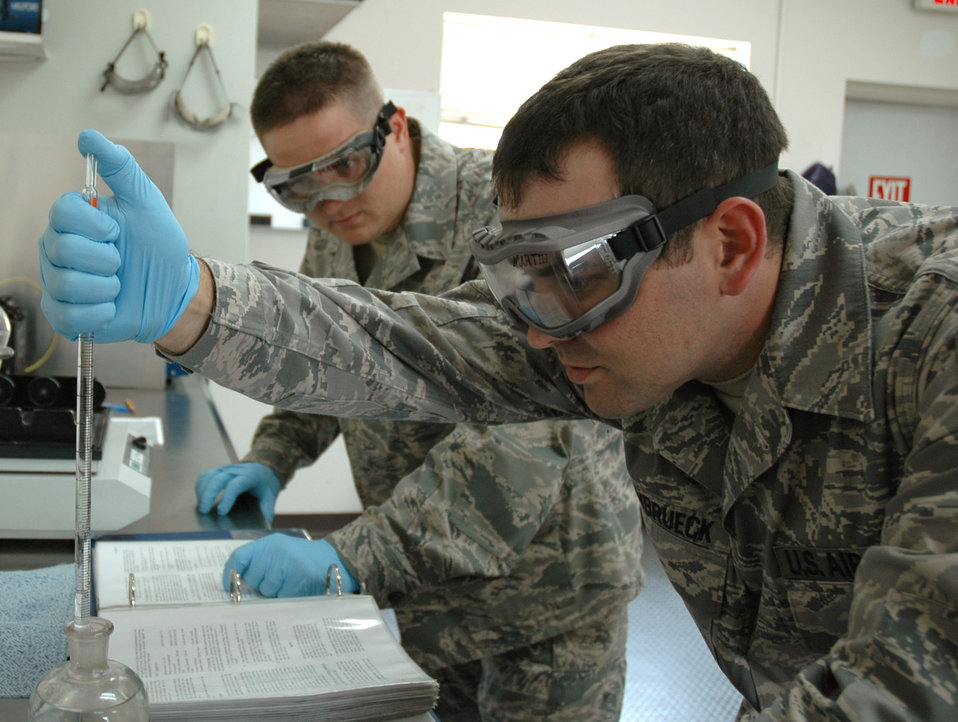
One more drop

Tech. Sgt. David Jackson (left) trains Staff Sgt. James Steinbrueck on the proper testing procedure for a fuel system icing inhibitor analysis July 6, 2010, at Dover Air Force Base, Del. The inhibitor lowers the freezing point of small quantities of free water in fuel. Both Airmen are with the 512th Logistics Readiness Flight.